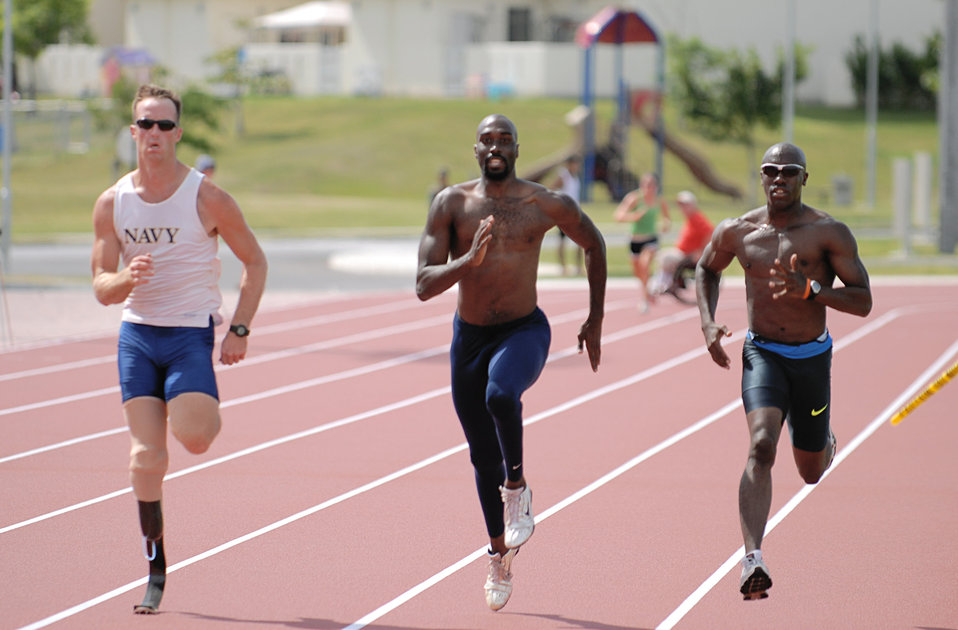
Paralympic athletes train at Kadena

Navy Petty Officer Casey Tibbs(left) from San Diego, Calif., races alongside teammate Josiah Jamison and running guide Jerome Avery, both from Chula Vista, Calif., Aug. 26 at Ryukyu Middle School on Kadena Air Base, Japan. More than 100 athletes and support staff from the U.S. Paralympics track and field and swim teams arrived on Kadena AB Aug. 24 to live and train for the next ten days in preparation for the 2008 Paralympic Games being held in Beijing, China, Sept. 6.